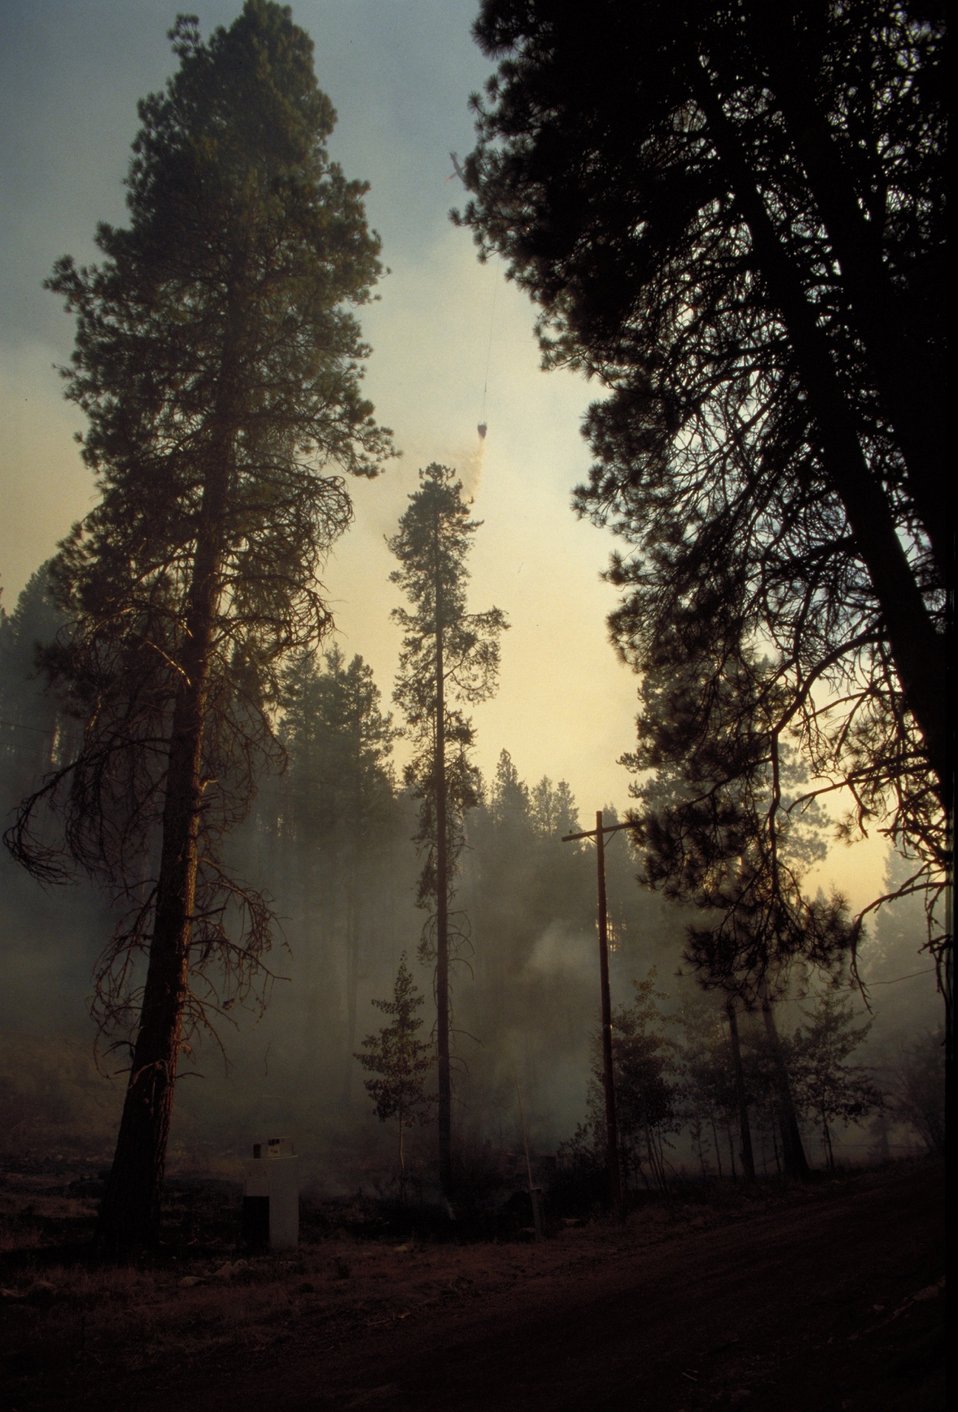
Burnt trees and powerline Fire Season 2000 Lower Snake River District LSRD